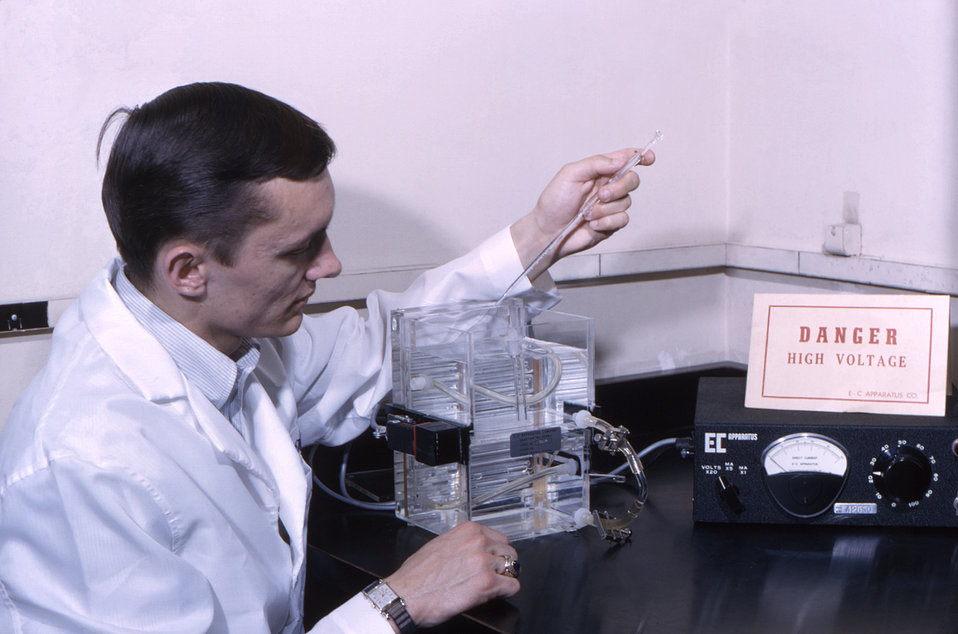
This historic 1964 image depicted John Hall as he was operating an electrophoresis apparatus in one of the Centers for Disease Control's laboratories.